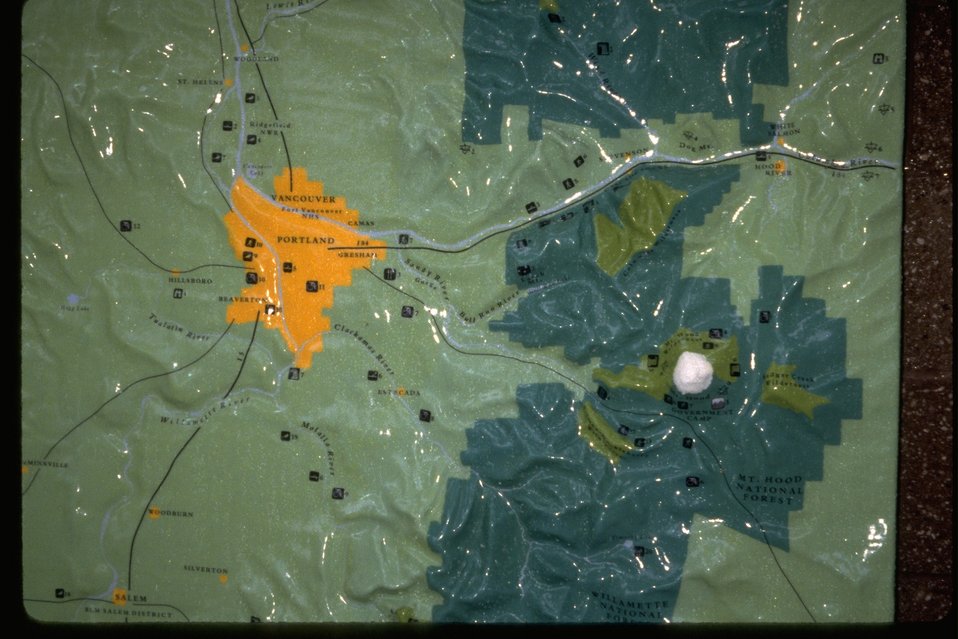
Display of interagency public lands tactile model at the Oregon Zoo.